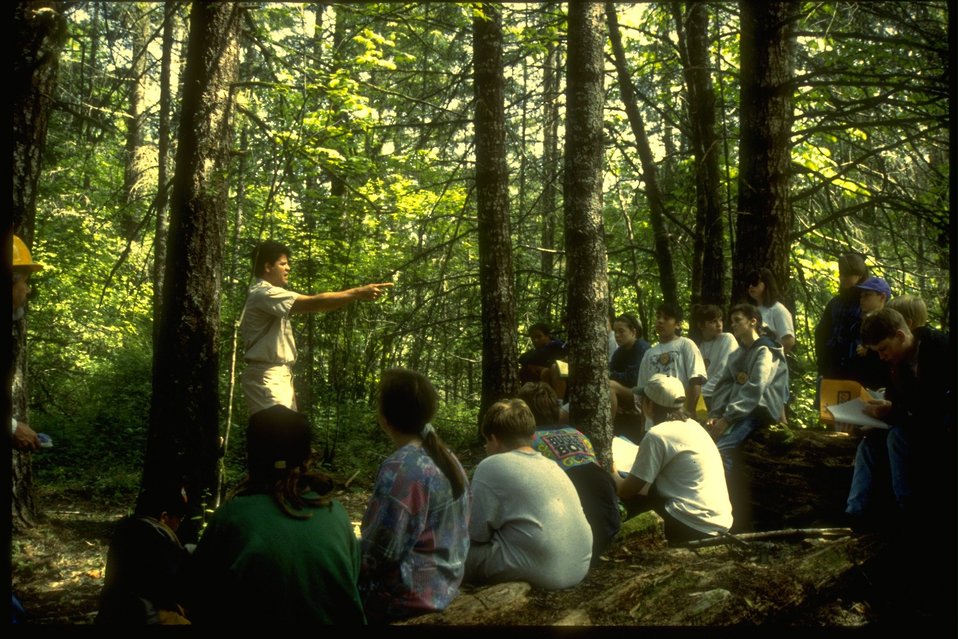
Presentation to Kids.